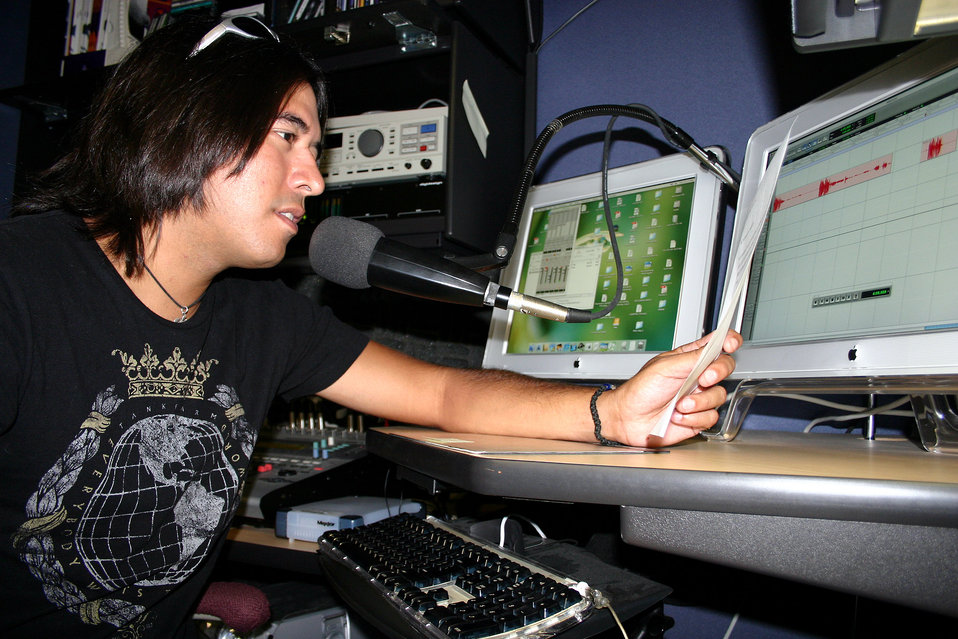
Country music singer encourages new recruits to stay focused

Donovan Chapman visits Air Force Recruiting Service to record two public service announcements with messages of encouragement to people in the military, and those who are getting ready to join July 17 at Randolph Air Force Base, Texas. Mr. Chapman is a country music singer and a former Air Force security forces member.